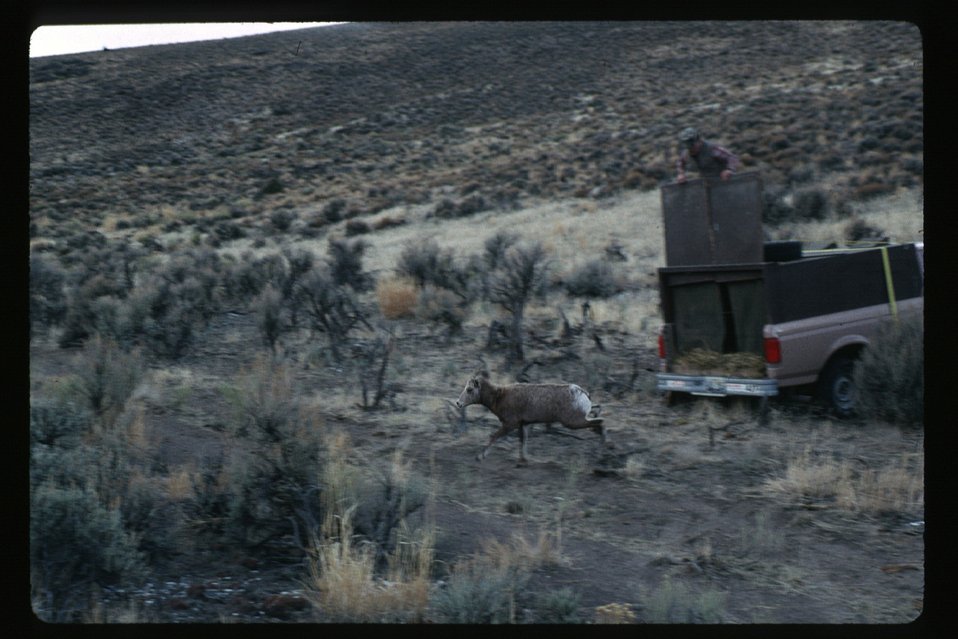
Bighorn Sheep Wildlife LSRD Lower Snake River District